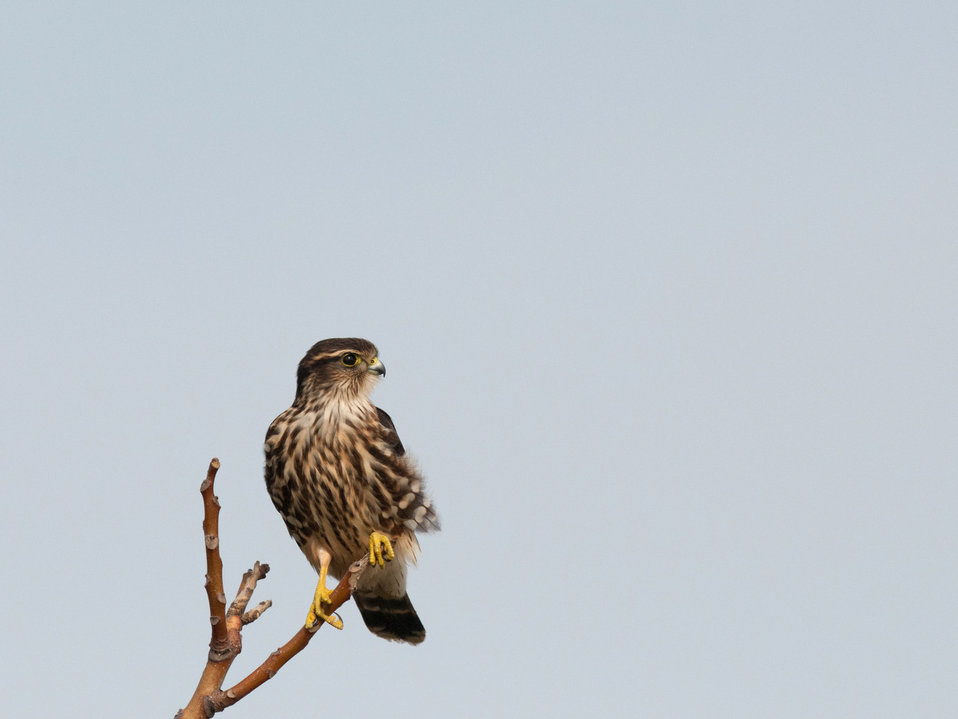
Merlin

Photographed in Warwick, RI.